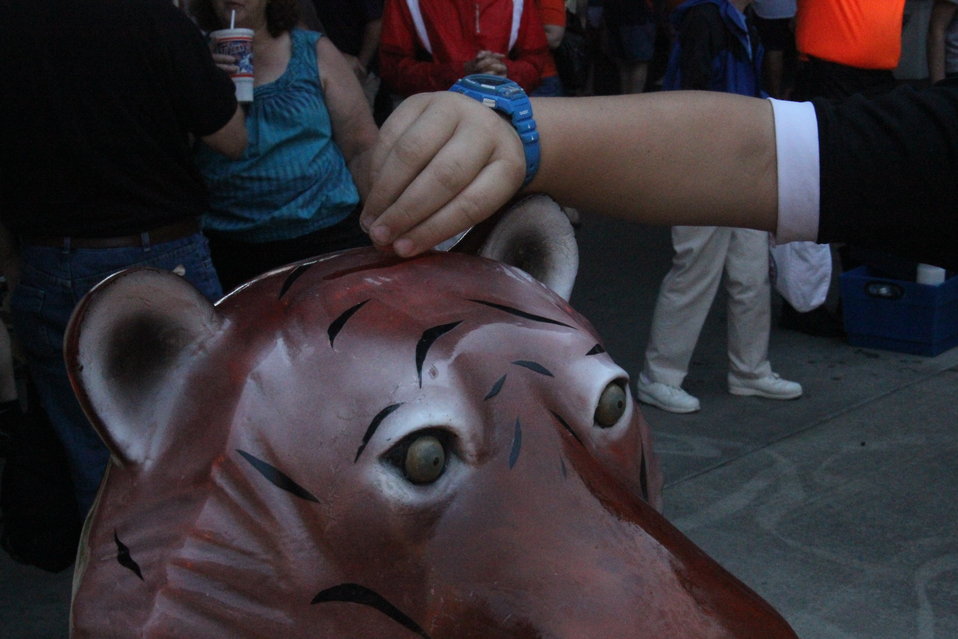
Pennies for Paws